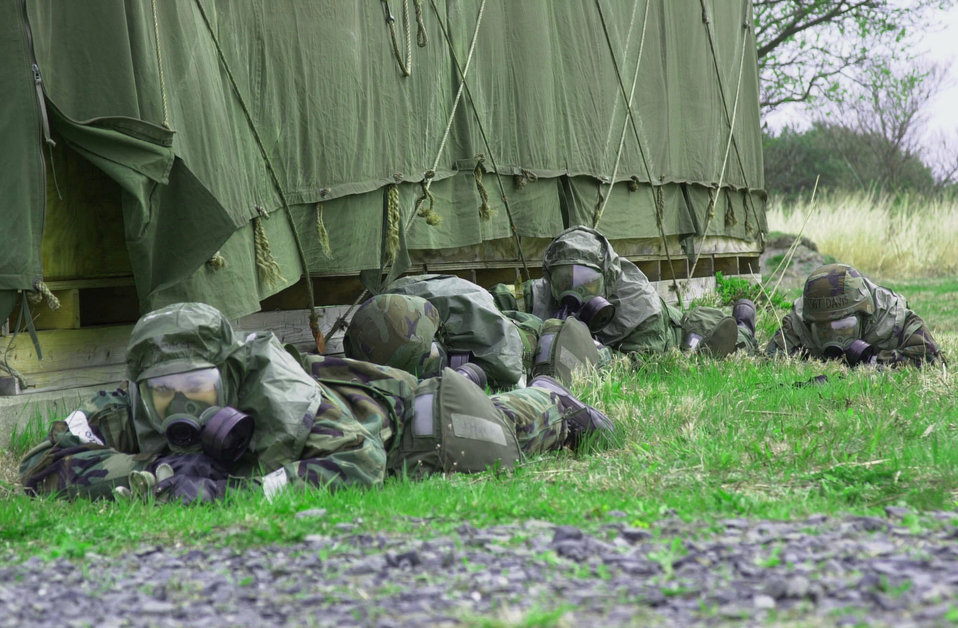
Take cover

MISAWA AIR BASE, Japan --Members of the 35th Medical Operations Squadron take cover during a simulated gas attack at their annual medical readiness training exercises here, May 3, 2001. The exercise tested the squadron's ability to provide emergency medical care in a combat environment.